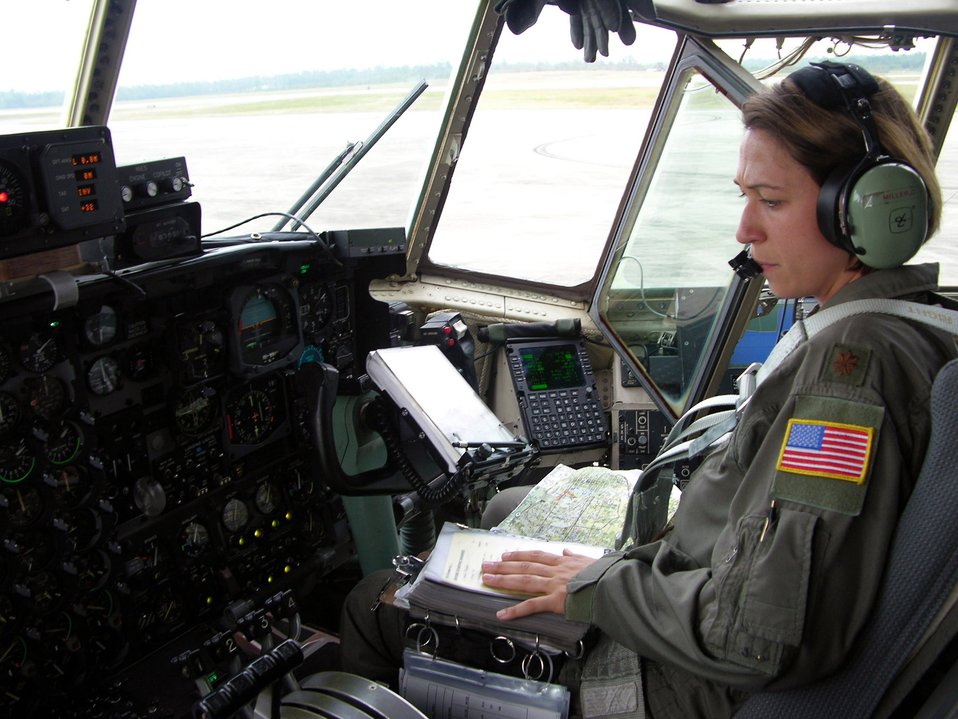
Reservists reducing hurricane-born insects

DUKE FIELD, Fla. -- Maj. Cathy Miller, co-pilot and aircraft commander for an aerial spray flight over Louisiana, goes through her preflight checklist shortly before takeoff. Air Force Reserve Command crews unanimously agree that the Gulf Coast missions are their most difficult aerial spray flights to date.